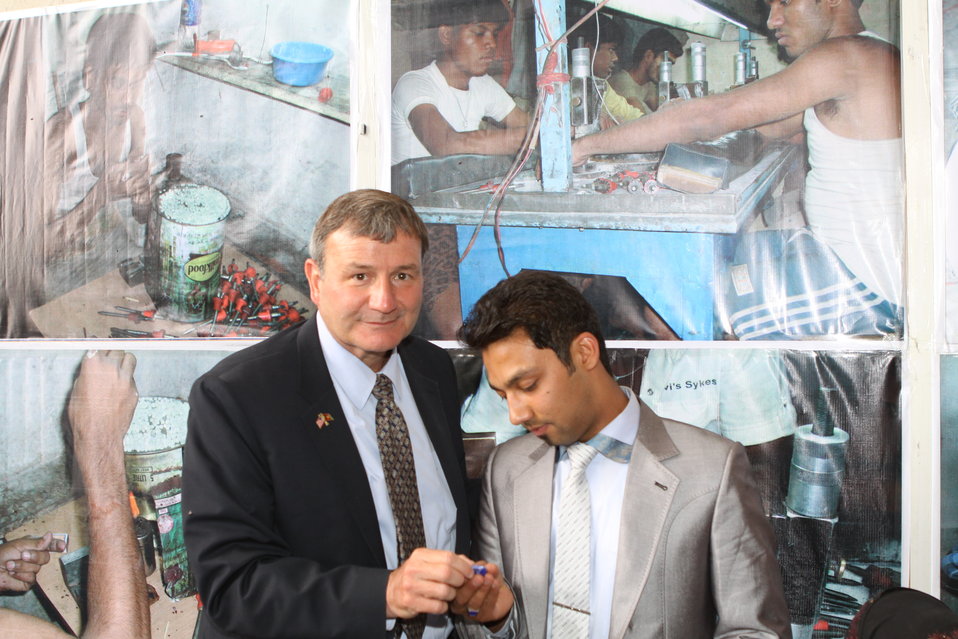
100525 Hirat Marble Conference 508